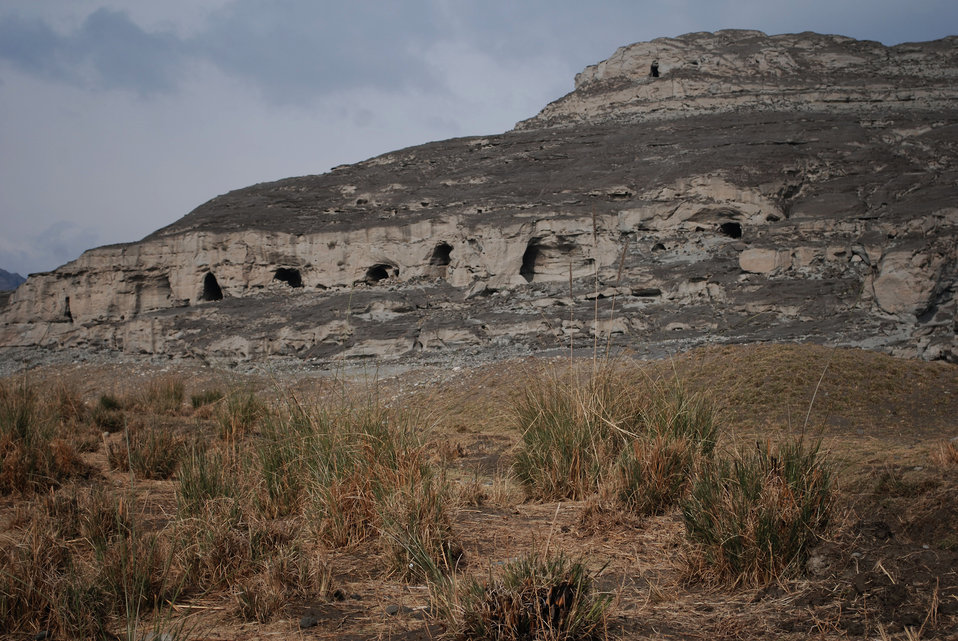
'On the Road' in Nangarhar Province